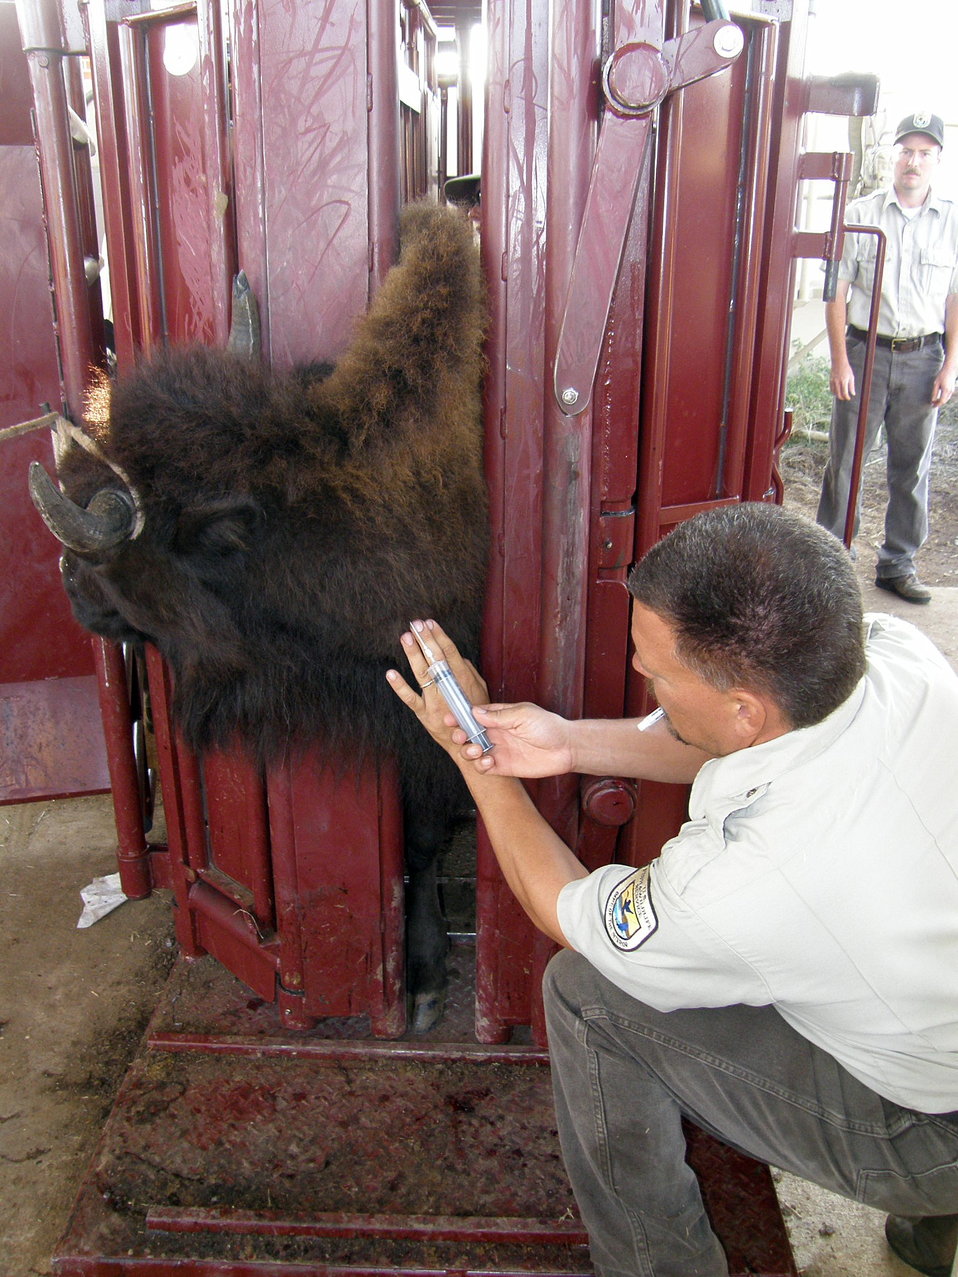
Collecting Bison Blood

Technician Steve Hodge of Wichita Mountains National Wildlife Refuge in Oklahoma collects a blood sample from a bison during the annual bison roundup. Blood is collected from a subsample of the herd at each bison refuge each year for health and disease.